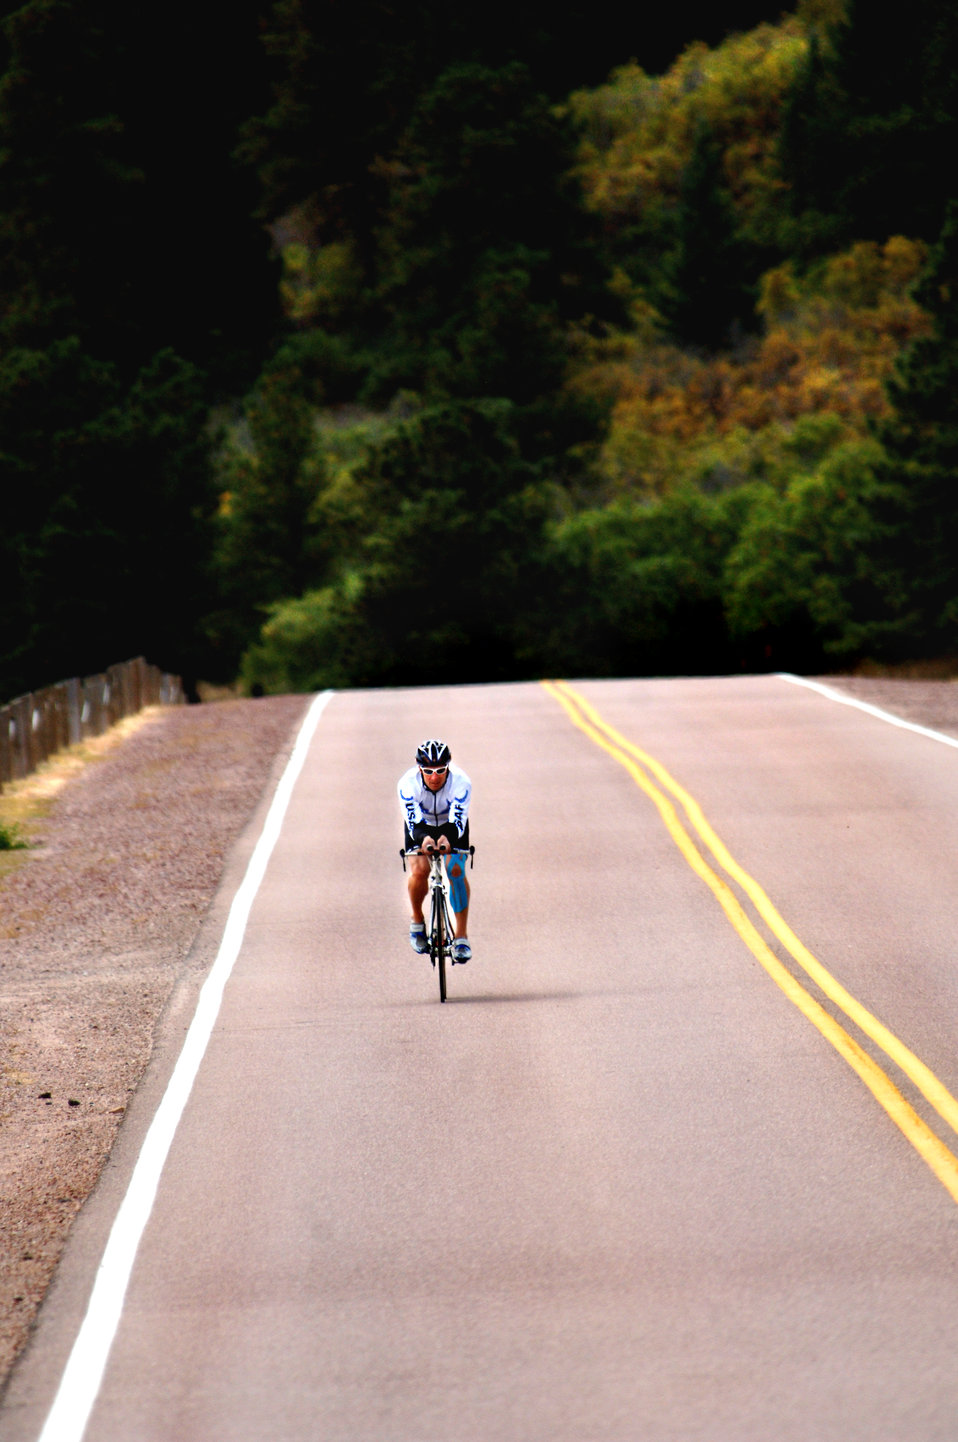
Academy officer picked for top triathlon

Maj. Scott Poteet, the adviser for Air Force Academy Cadet Squadron 02, trains for the 2010 Ironman Triathlon Oct. 4, 2010 at the Academy. Poteet's regimen includes more than three hours of training per day biking, swimming and running. The Ironman Triathlon takes place Oct. 9 in Kona, Hawaii.